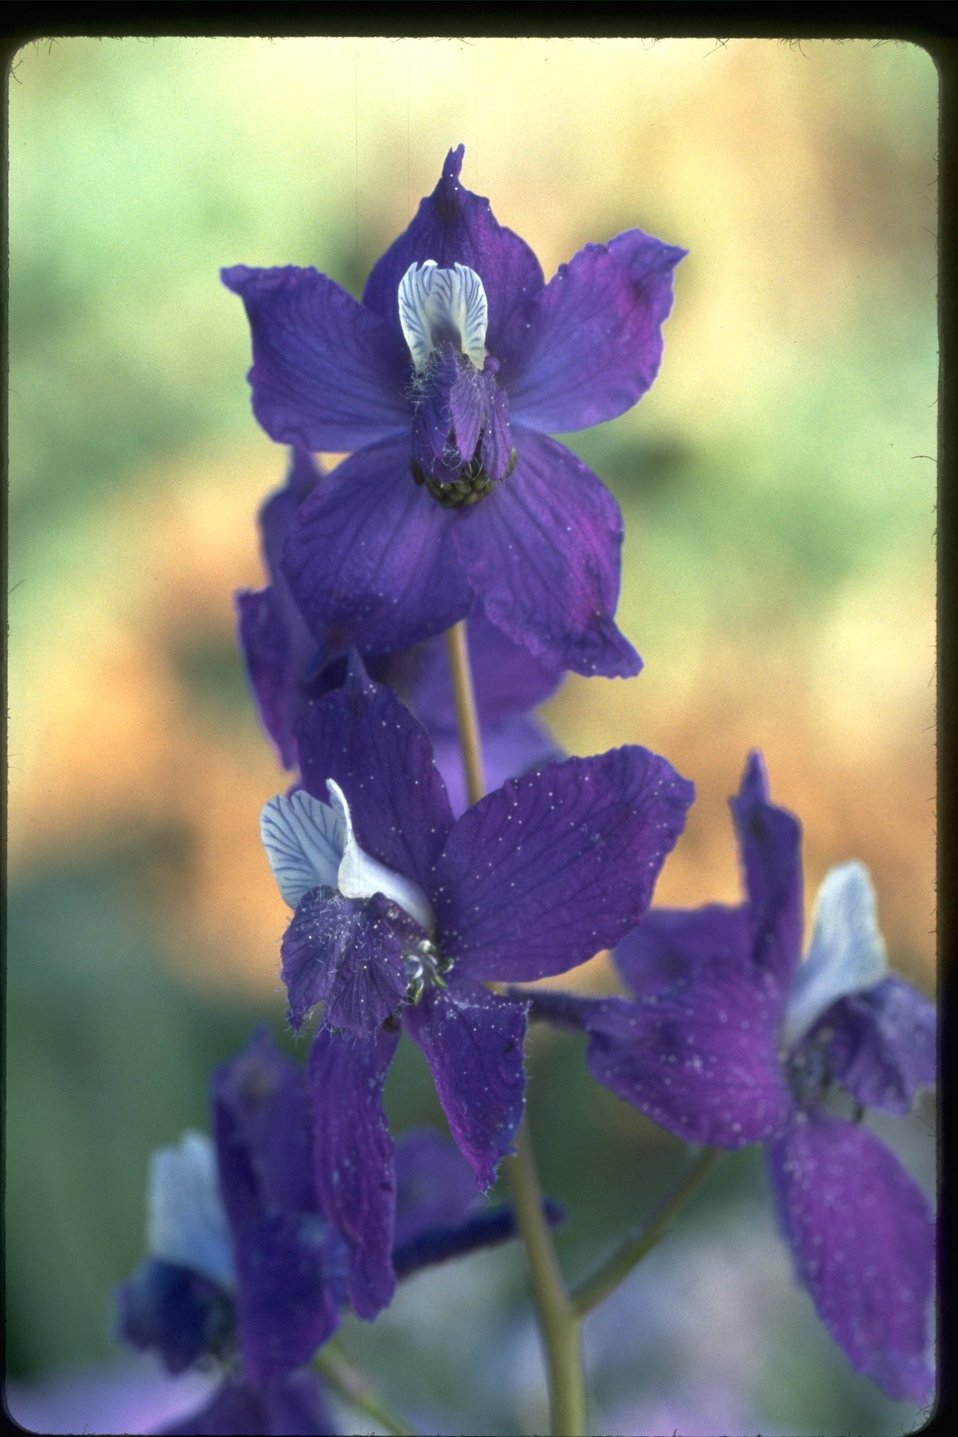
Close up shot of delphinium/Larkspur wildflower with dew.